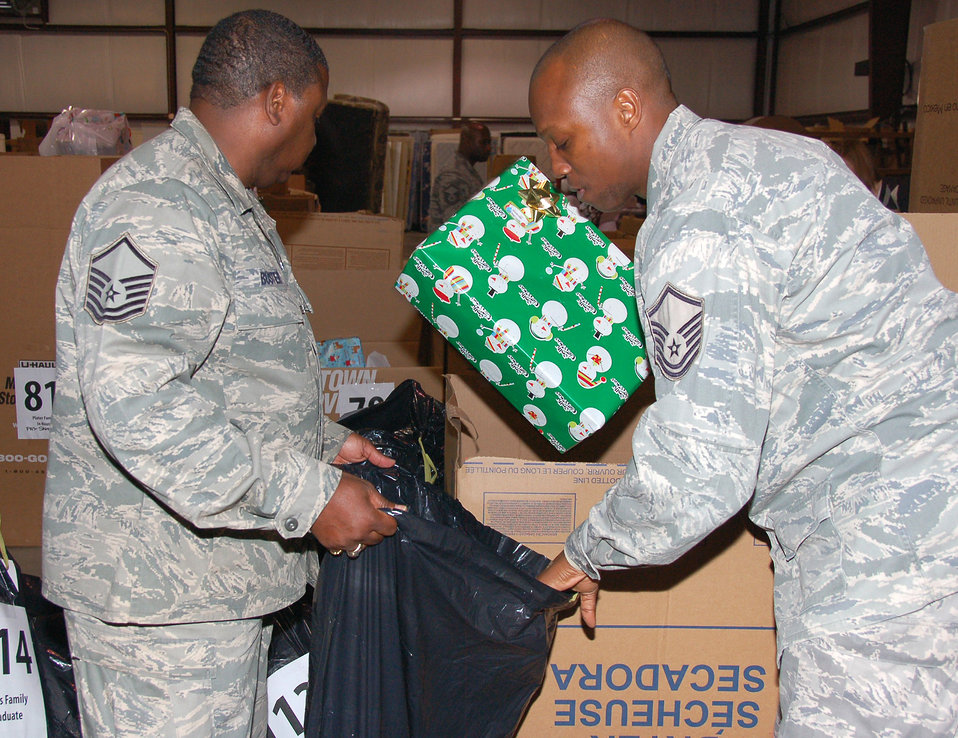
Santa's helpers

Master Sgts. Kelvin Buster (left) and Anthony Anderson organize presents at the Providence House warehouse Dec. 17, 2010, in Shreveport, La. The presents will be delivered to more than 150 families enrolled in the